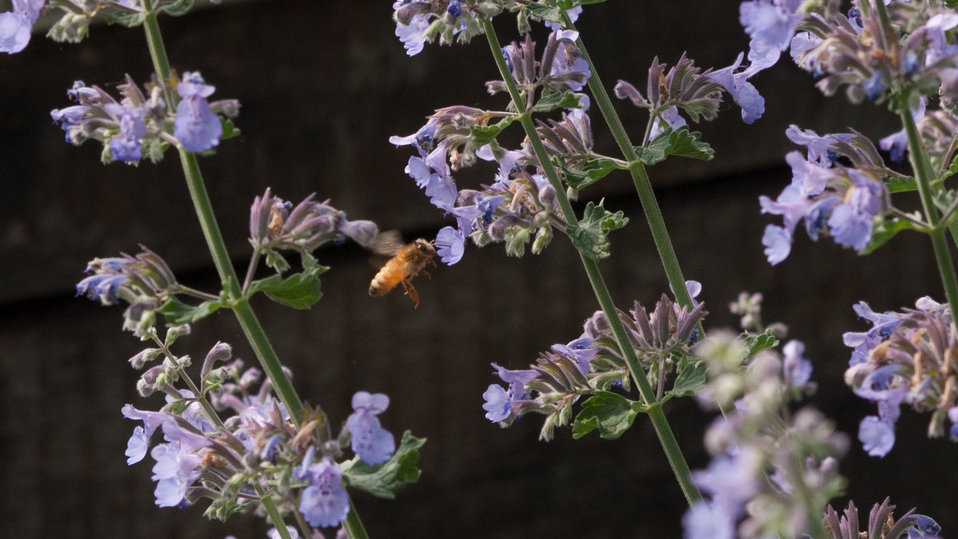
A honey bee is attracted to flowers in the U.S. Department of Agriculture People's Garden, pollinator garden, outside the headquarters' Whtten Building in Washington, D.C., on Wednsday, May 22, 2013.